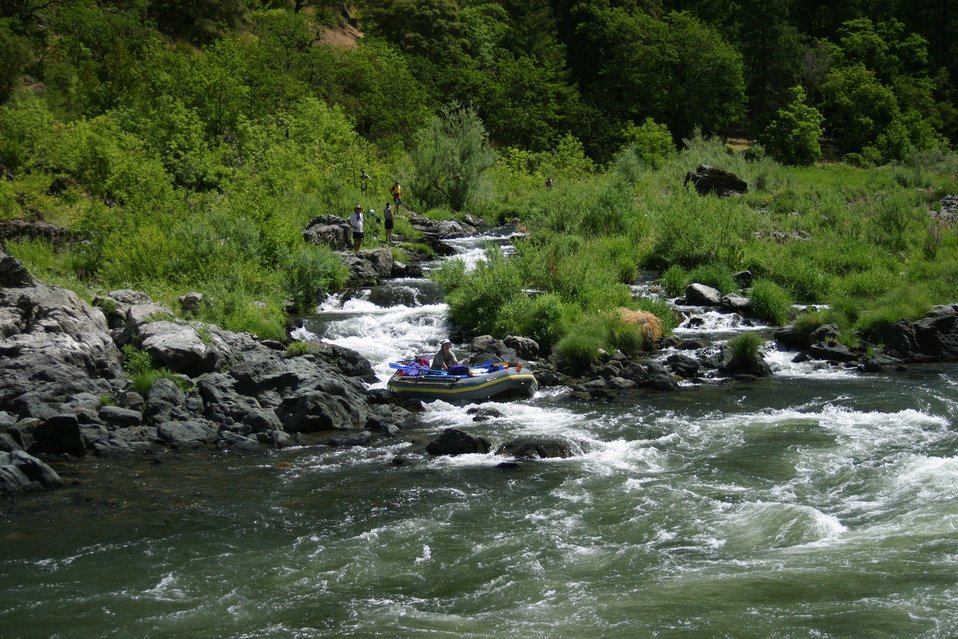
Rainie Falls Fish Ladder